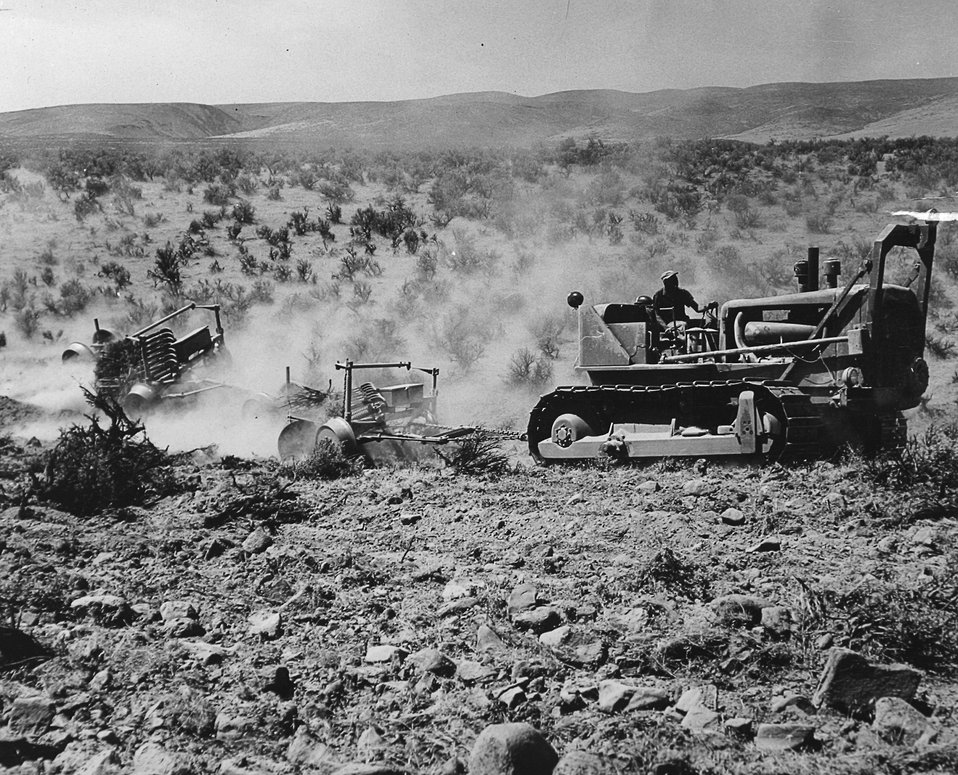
Rangeland plows in operation, common practice in restoration of depleted ranges. circa 1950 - 1960